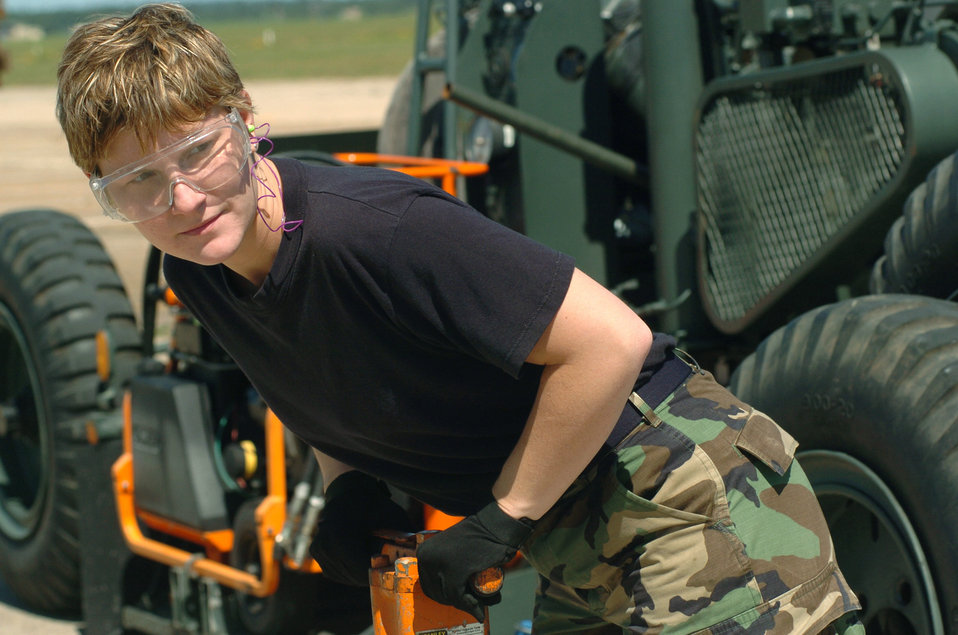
A perfect fit

SHAW AIR FORCE BASE, S.C. -- Airman 1st Class Carolyn Jennings drills holes for spikes used to stabilize the Mobile Aircraft Arresting System here. She is assigned to the 27th Civil Engineer Squadron at Cannon Air Force Base, N.M.